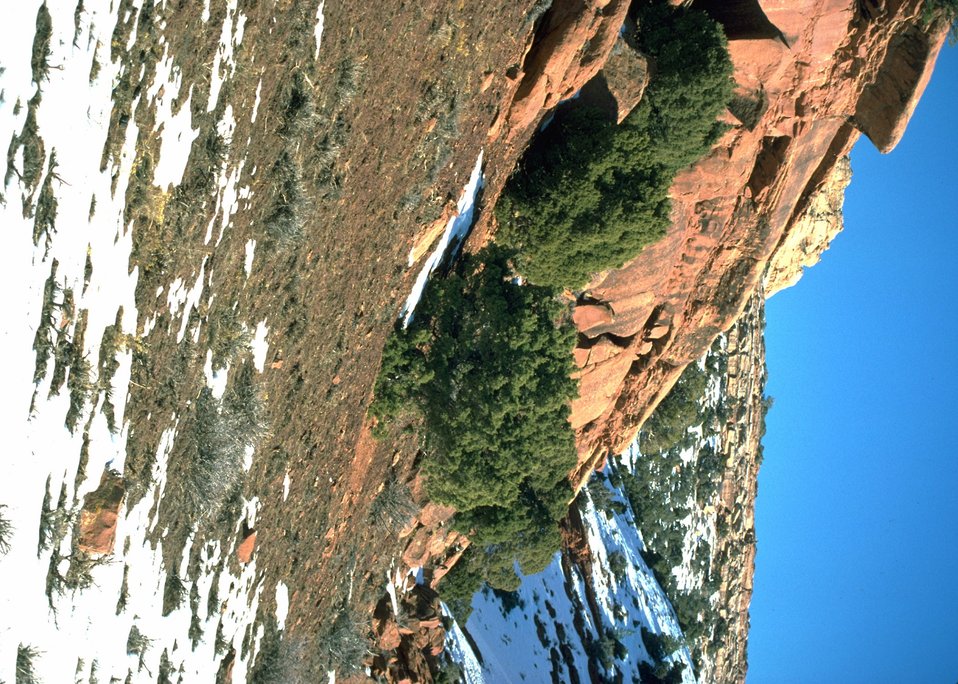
Scenic rock area.